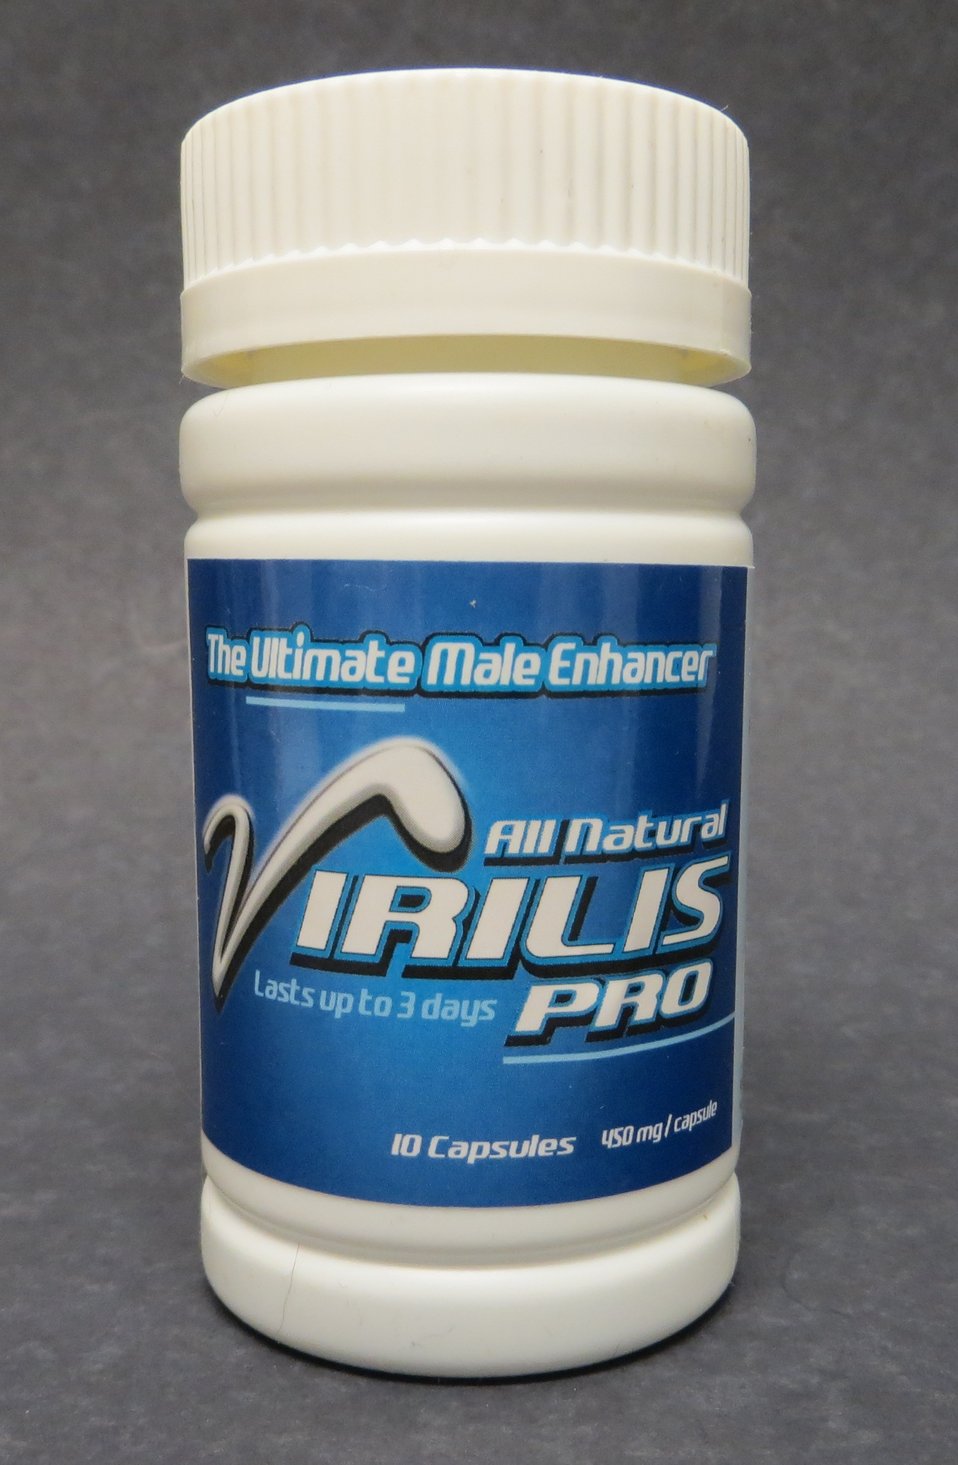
Virilis Pro

September 24, 2013 - The FDA is advising consumers not to purchase or use 'Virilis Pro,' a product promoted and sold for sexual enhancement. The product was found to contain undeclared sildenafil. For more information, go to www.fda.gov/Safety/Recalls/ucm370506.htm

And read this Consumer Update: Beware of Fraudulent ‘Dietary Supplements’